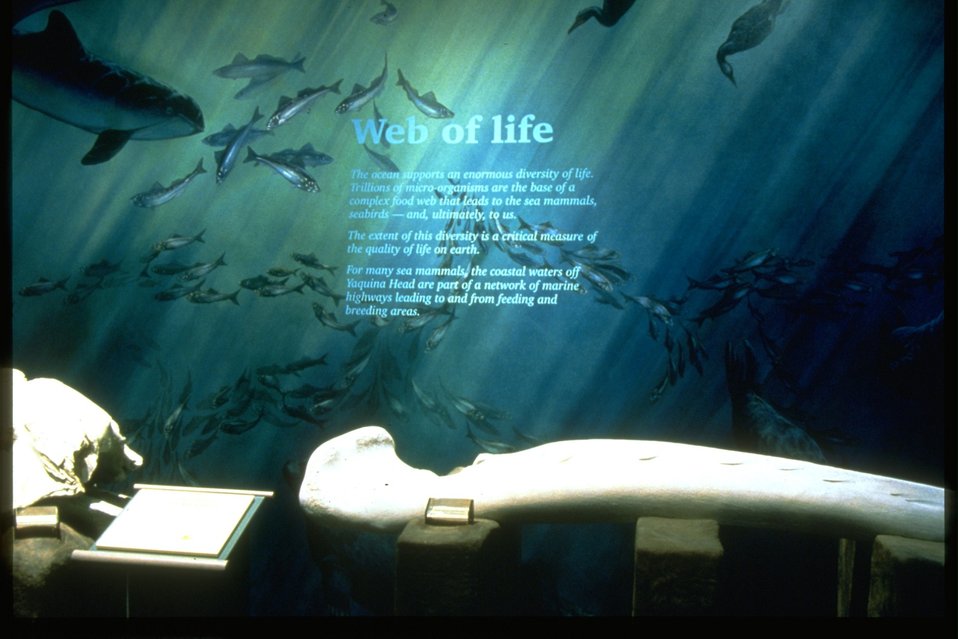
Gray Whale bones shown in an exhibit at the Interpretive Center of the Yaquina Head ONA.